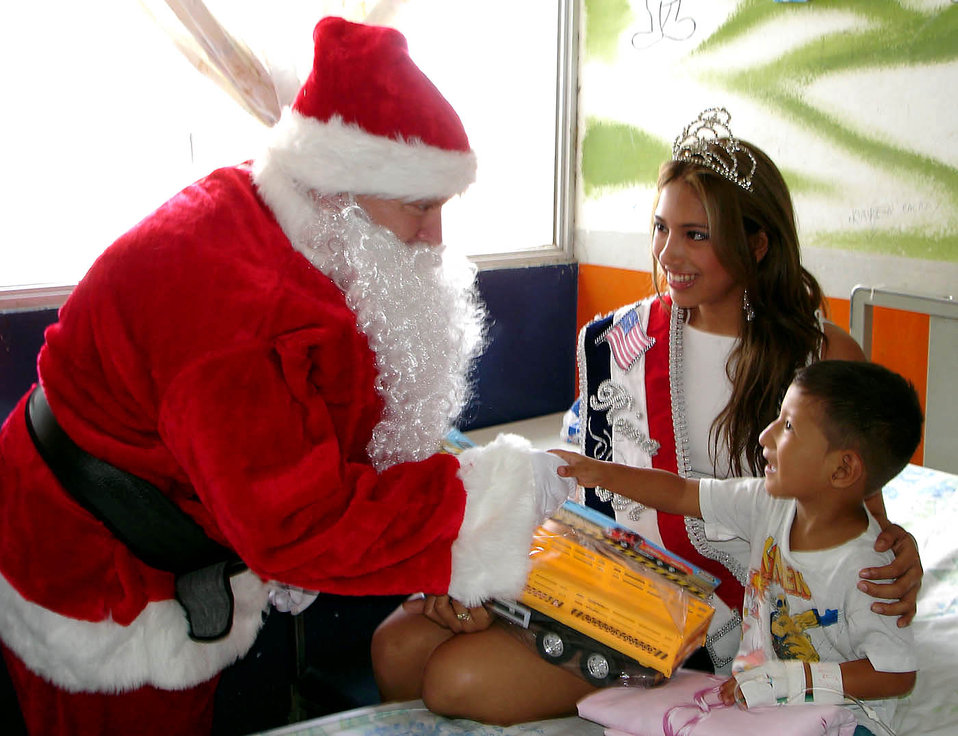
Santa visits Ecuador

MANTA AIR BASE, Ecuador (AFPN) -- Santa Claus hands a toy to a child at a local hospital. Airmen will be giving 1,800 toys to children at schools, hospitals and community organizations for the holidays.